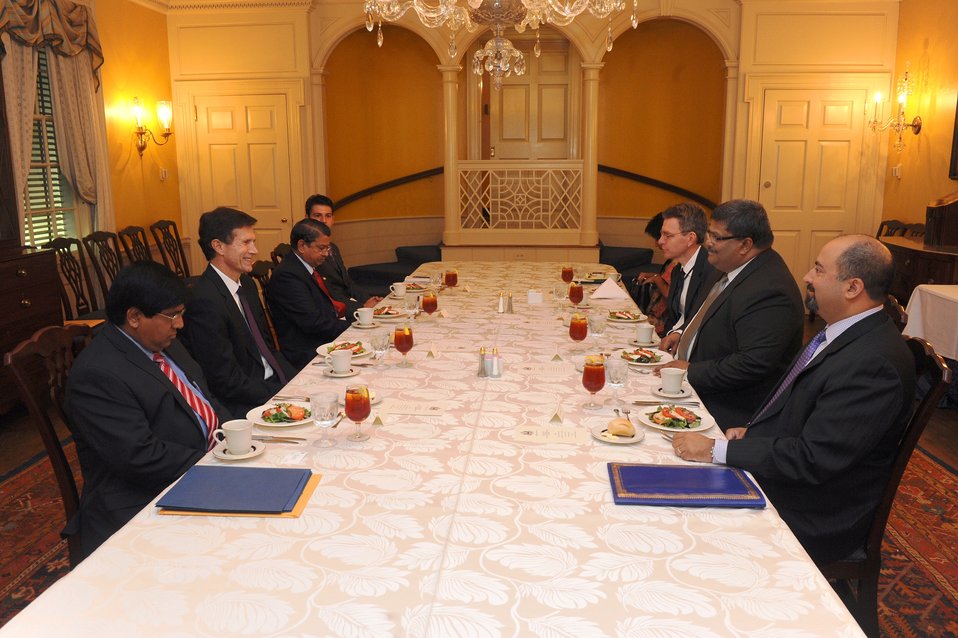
Assistant Secretary Blake Participates in a Working Lunch

U.S. Assistant Secretary of State for South and Central Asian Affairs Robert O. Blake and representatives of the Bureau of South and Central Asian Affairs participate in a working lunch with Bangladeshi Foreign Secretary Mijarul Quayes at the U.S. Department of State in Washington, D.C., on June 29, 2010.